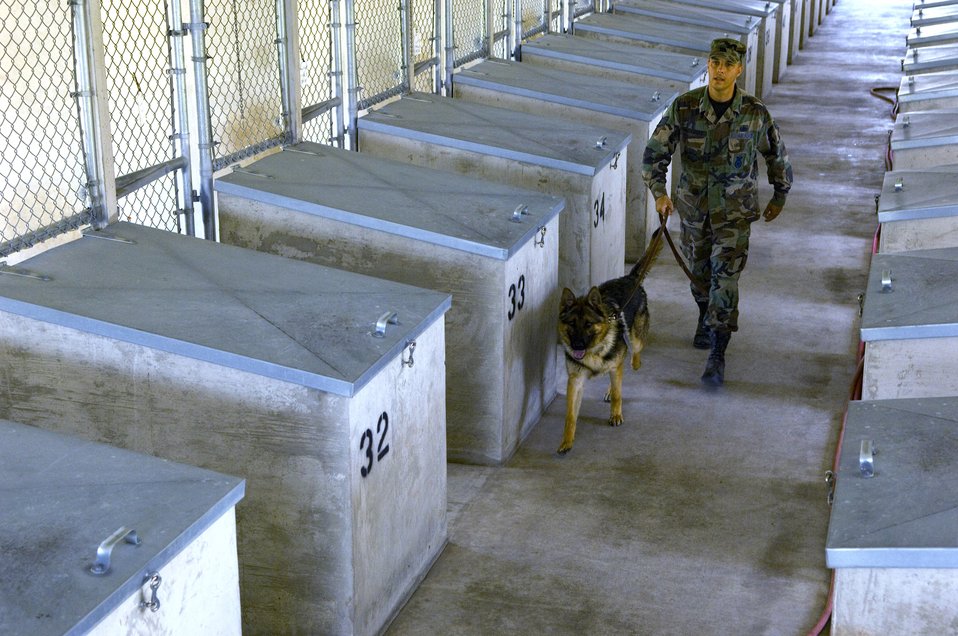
Canine Boot Camp: Instructors bark orders, recruits respond in kind

After a day of training is done at the